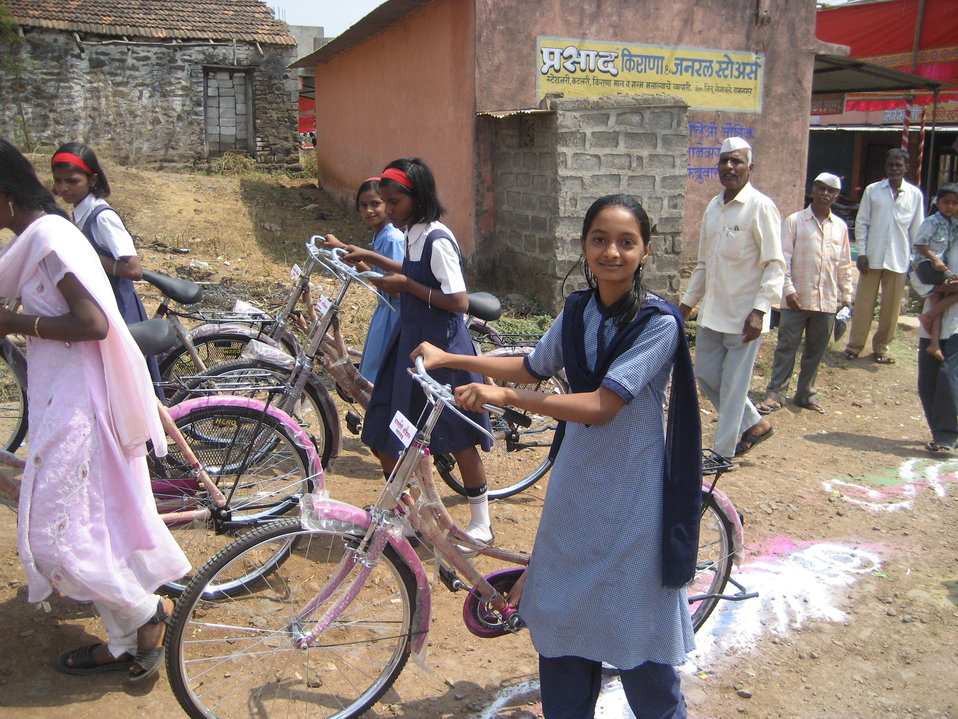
Lael Brainard's Visit to India

Young girls with the bicycles provided to them to enable them to travel to school and continue their education.